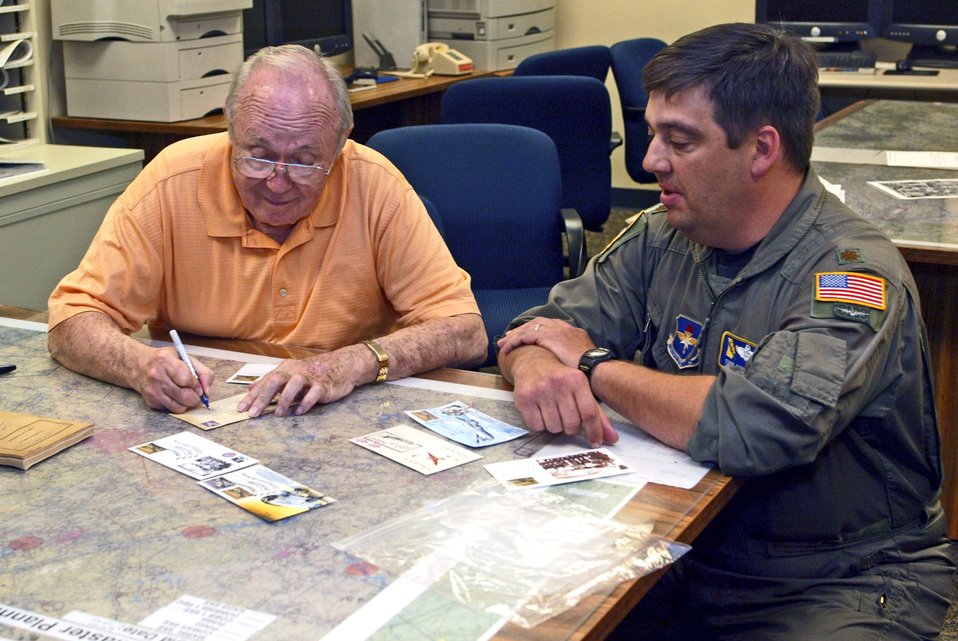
Pilot combines love of stamps, aviation to celebrate Air Force Anniversary

Retired Maj.Theodore Van Kirk, who was a navigator on the Enola Gay aircraft takes time to sign some of Maj. Todd Copley's stamp collection while visiting the 700th Airlift Squadron,at Dobbins Air Reserve Base, Ga.